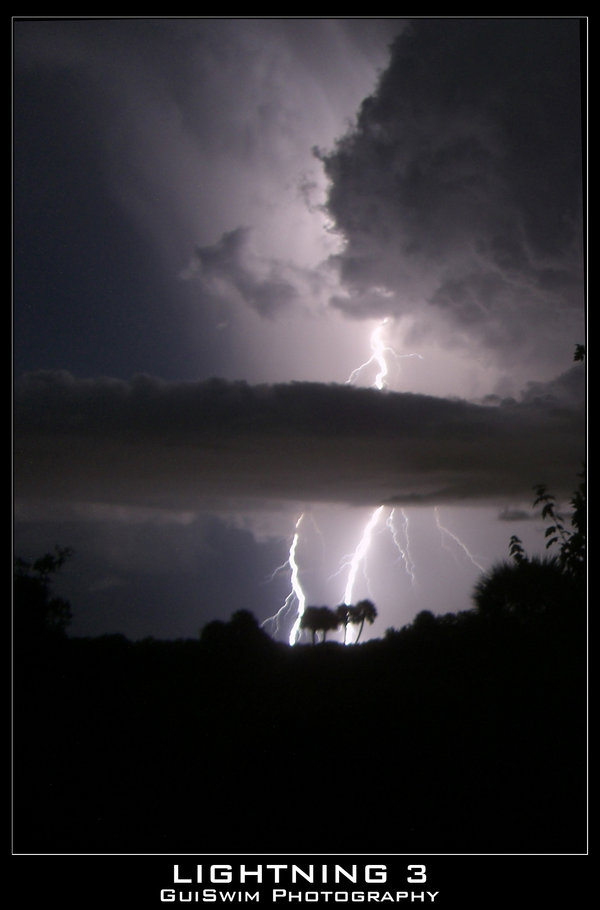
Uploaded by request of Dan Curhan

Taken in the cowfield behind my house in Sarasota FL during a violent thunderstorm.

The lightning was nearly constant during this intense storm - the kind of storm you only find in Florida, because, after all, Tampa is the lightning capital of the world!